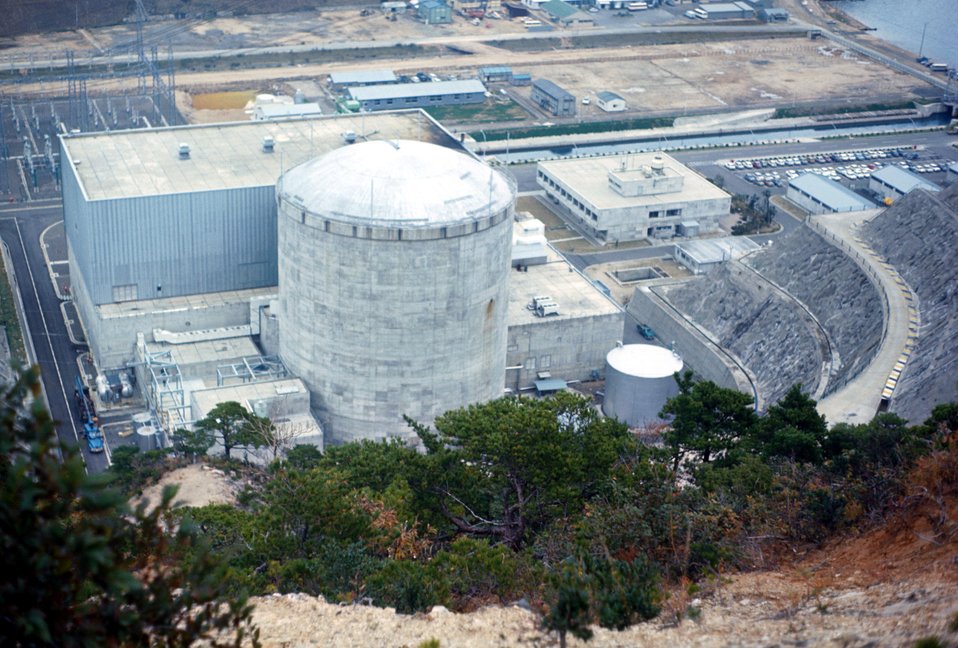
Japan - Tsuruga Plant - Japco Nuclear Reactor. c. 1970